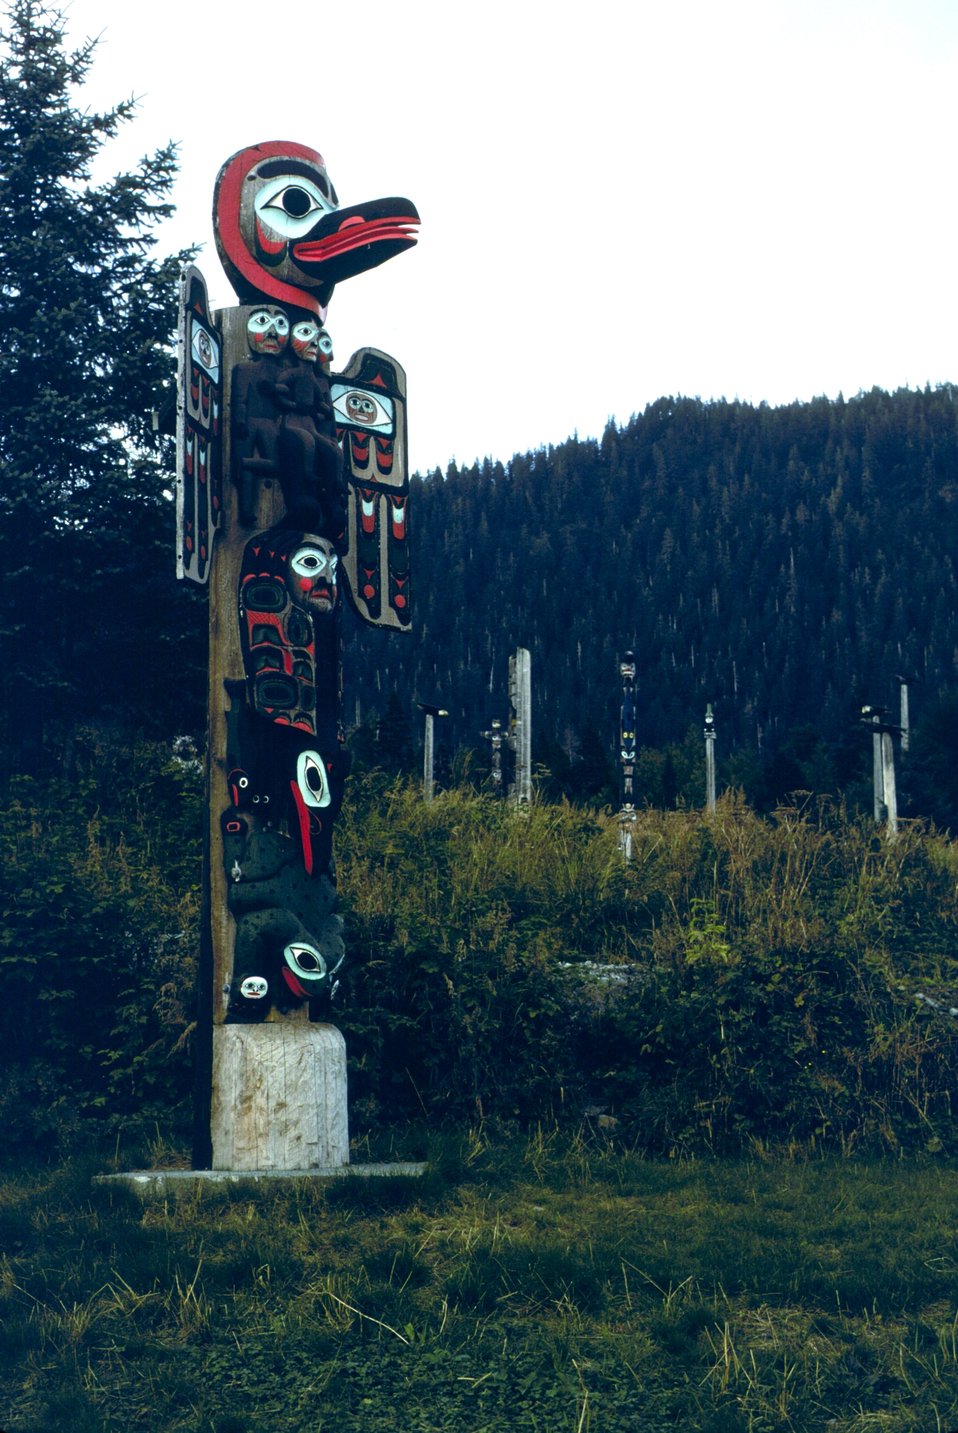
Totem poles Saxman Totem Park.